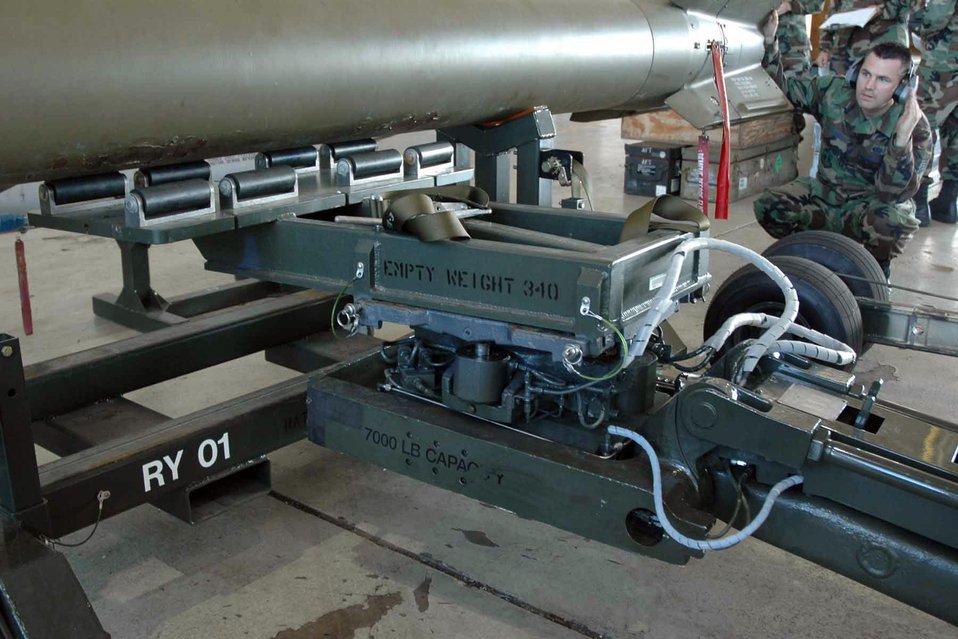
Small office comes up big

EGLIN AIR FORCE BASE, Fla. (AFPN) -- Tech. Sgt. Robert Massengill guides a jammer equipped with a loading adapter designed by the munitions materiel handling equipment focal point to move the 5,000-pound GBU-28. The 46th Test Wing's fabrication and installation team made the adapter. The focal point supports the Air Force armament and munitions community with the development of munitions support equipment, designing and fabricating tools to make life on the flightline easier for munitions Airmen. Sergeant Massengill is with the 46th Maintenance Group.